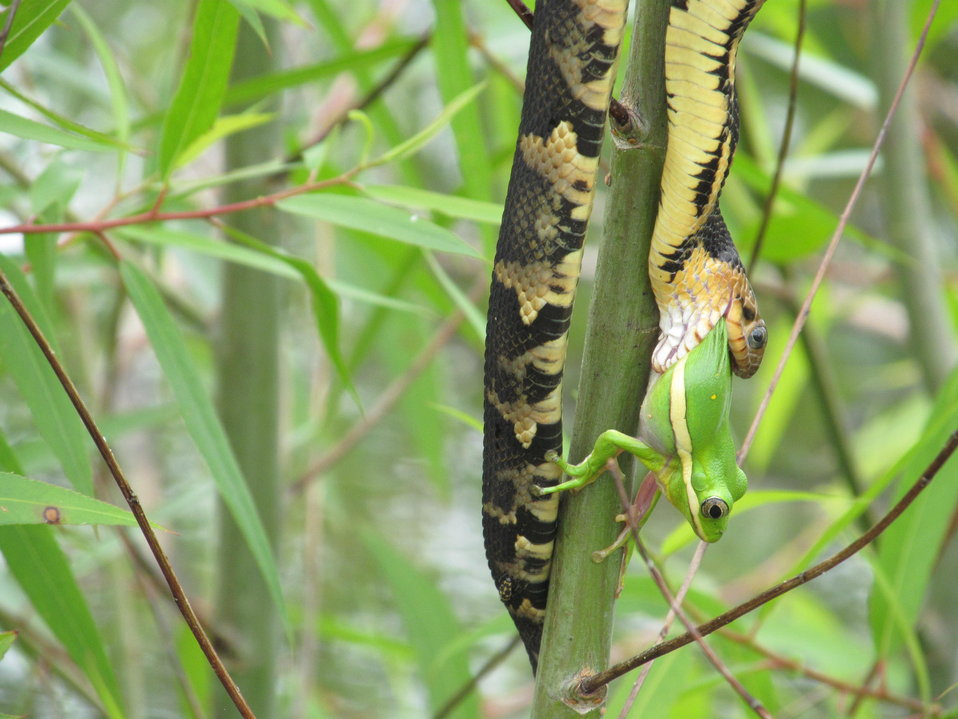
A broad-banded water snake eats a green tree frog at Mingo National Wildlife Refuge